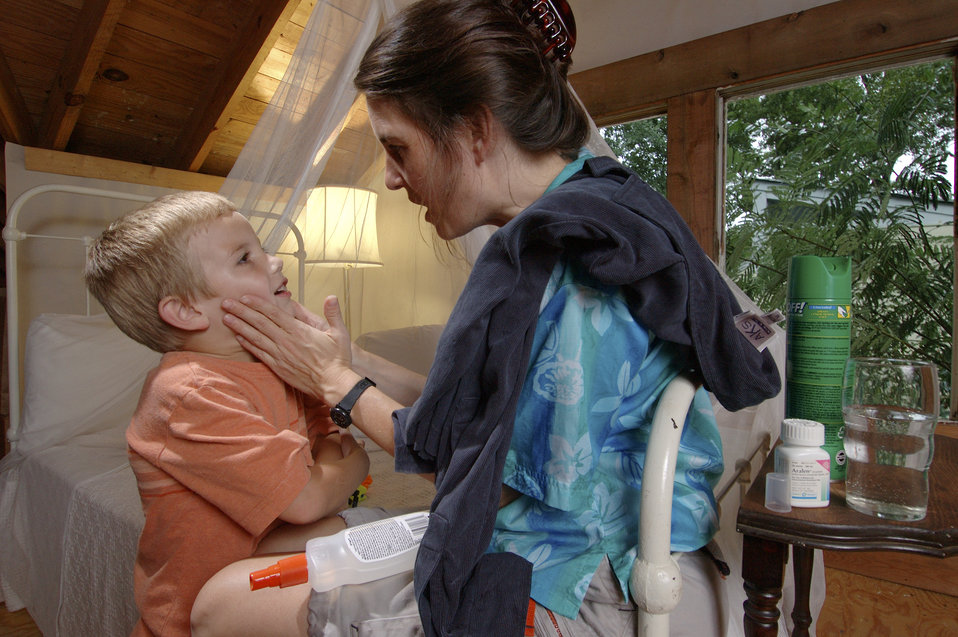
This photograph showed a mother applying mosquito repellent her child's skin in order to prevent mosquitoes from biting, thereby, preventing many arboviral, infections such as West Nile virus.